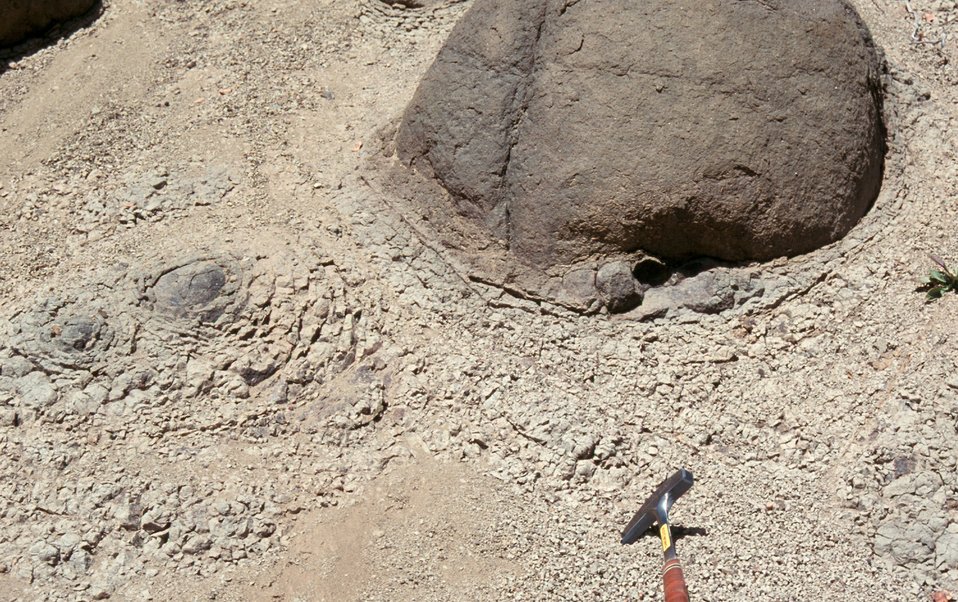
Spheroidal basalt weathering Four Rivers LSRD Lower Snake River District